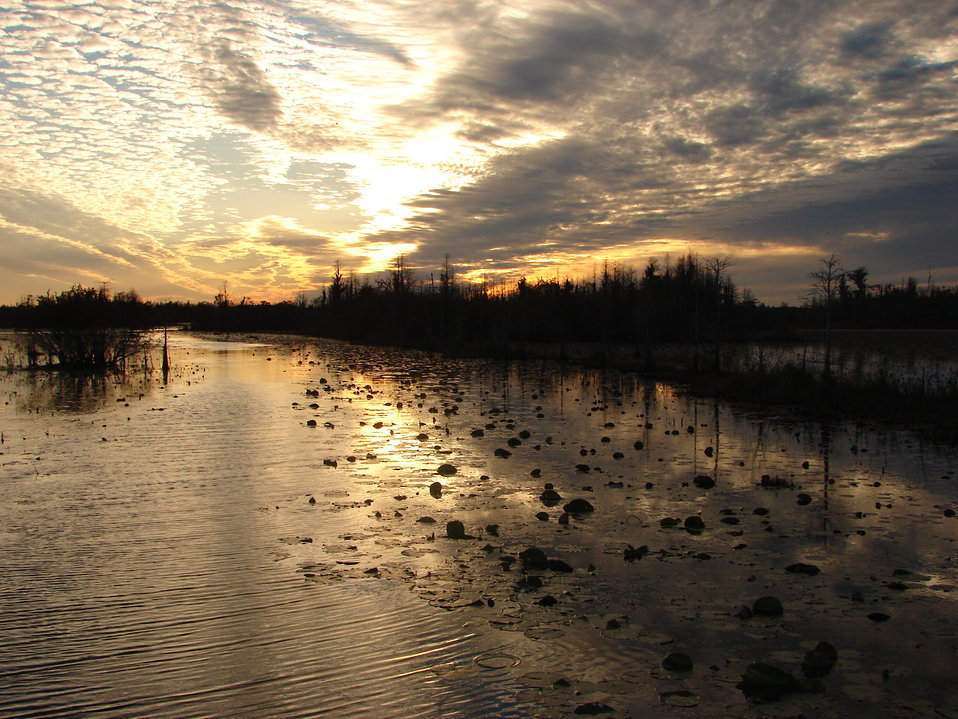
Okefenokee Sunset2

Chesser Prairie, Okefenokee National Wildlife Refuge.